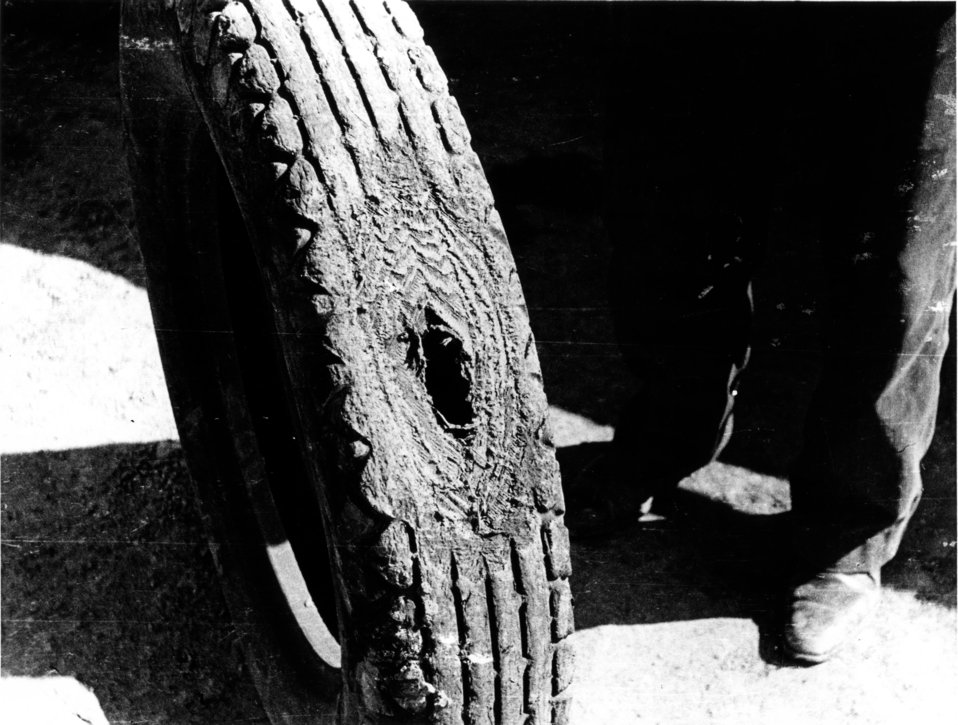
Daily Life at Oak Ridge